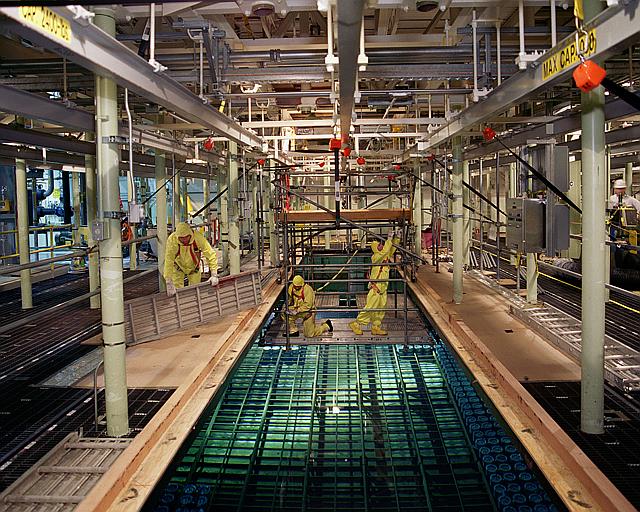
Some 2,310 tons of irradiated uranium fuel was once stored in two water-filled concrete basins, known as K Basins, near the Columbia River. Some rods are intact; others are heavily corroded. Pacific Northwest National Laboratory is supporting K Basin cleanup.